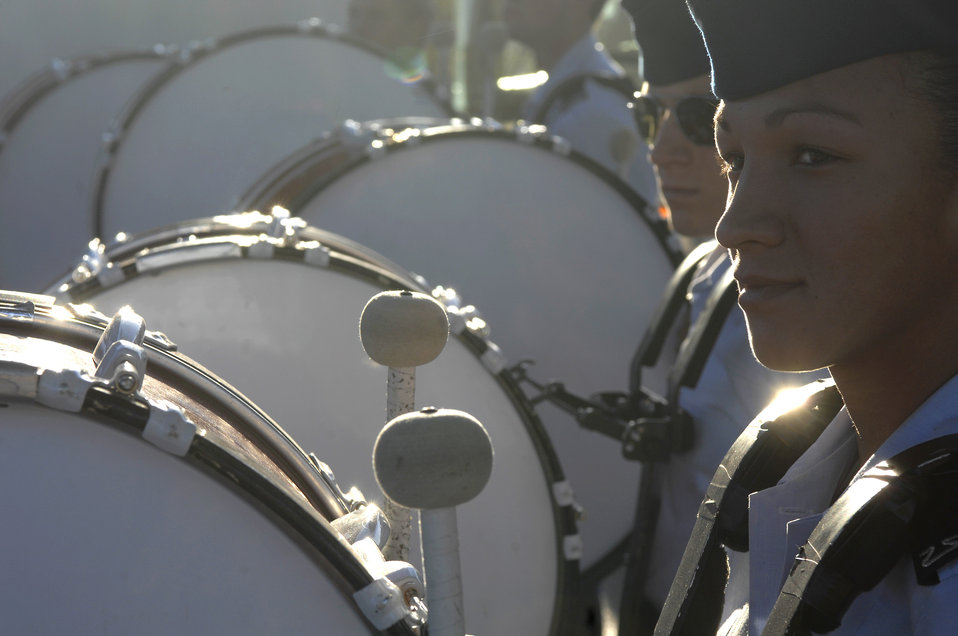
The beat goes on

Cadet Jessica Douglas of the U.S. Air Force Academy Cadet Drum and Bugle Corps stands by to play during a pep-rally Dec. 31 at the Bell Helicopter Armed Forces Bowl game in Ft. Worth, Texas, between the Academy Falcons and the University of California-Berkley.